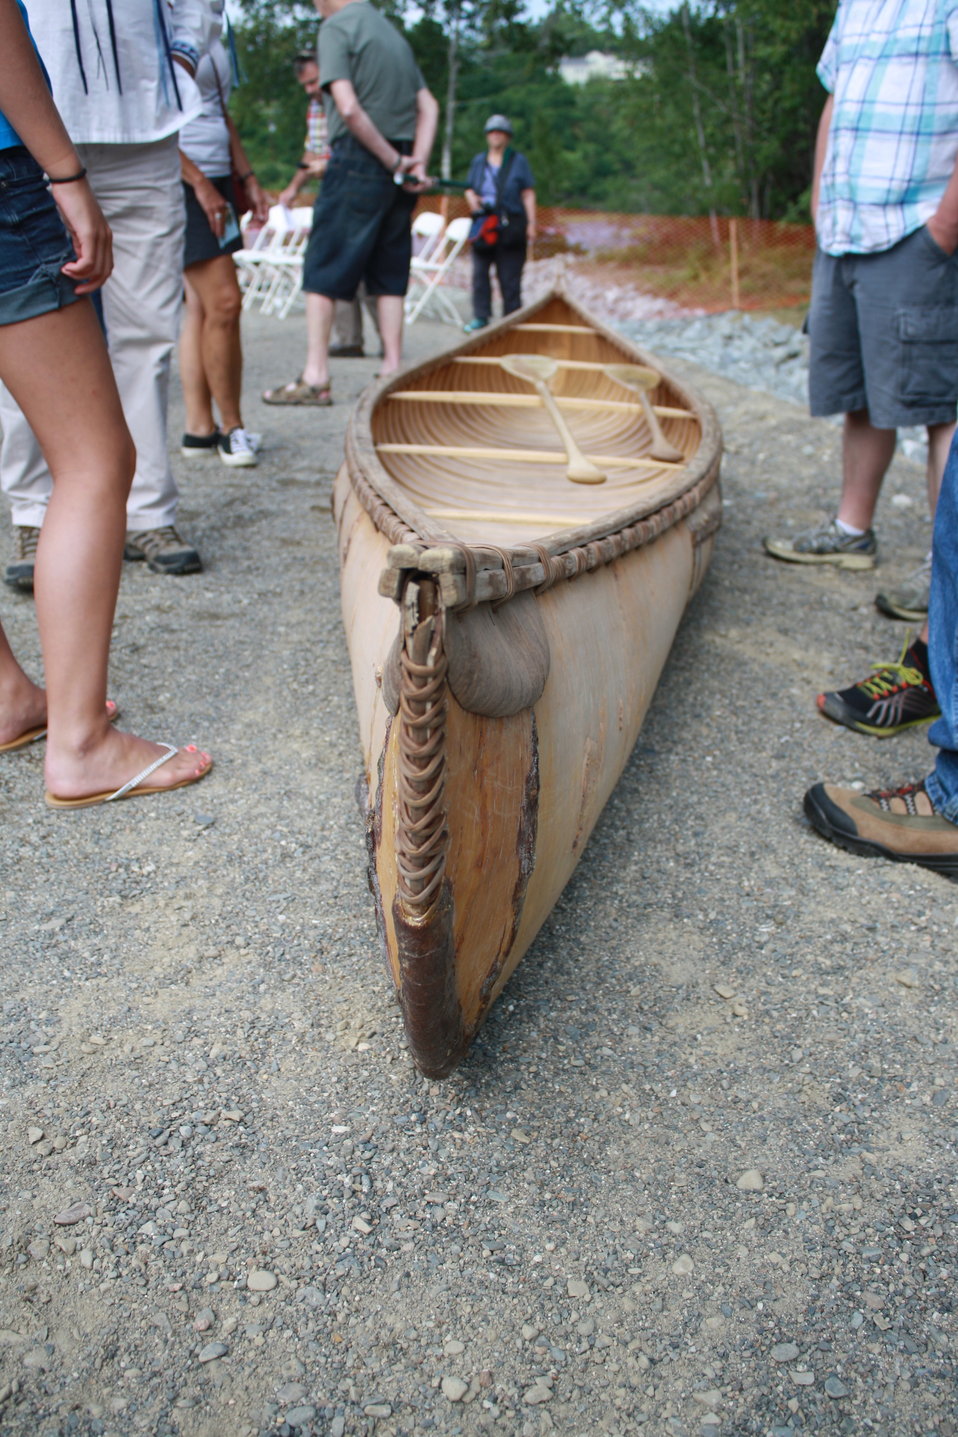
Veazie Dam Removal

The Penobscot Indian Nation brought a traditional birch bark canoe to the press conference.